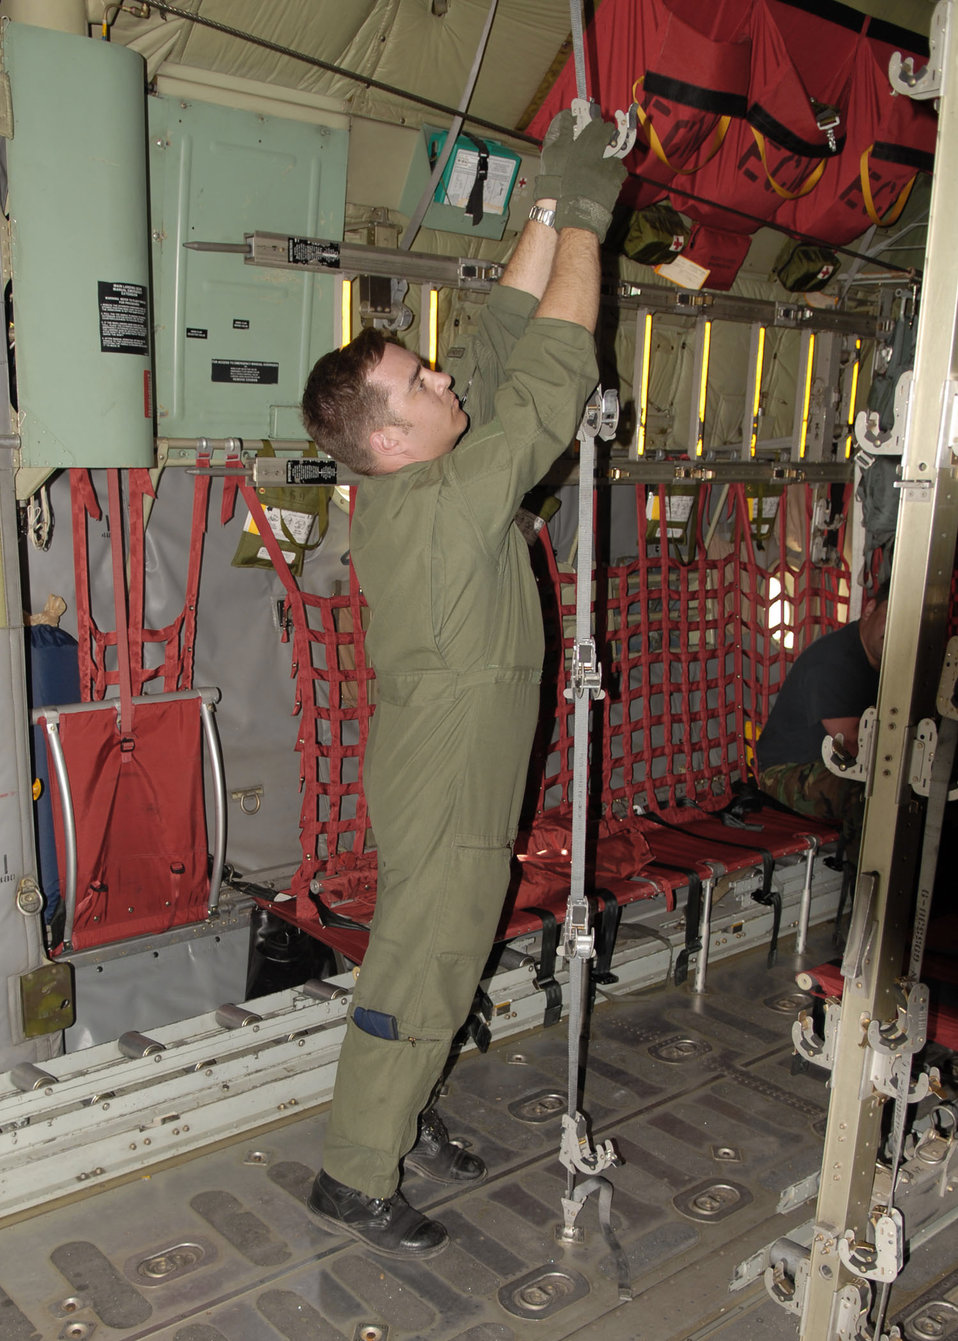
Aeromedical evacuation knowledge shared in Indonesia

Tech. Sgt. Tom Hough checks litter stanchion straps on a C-130 Hercules July 19 at El Tari Air Force Base, Indonesia. The straps allow the C-130 to transport medical patients. U.S. Airmen in Indonesia as part of Operation Pacific Angel 2009 practiced loading patients with the Indonesian military and local doctors. Sergeant Hough is a loadmaster from Kulis Air National Guard Base, Alaska.